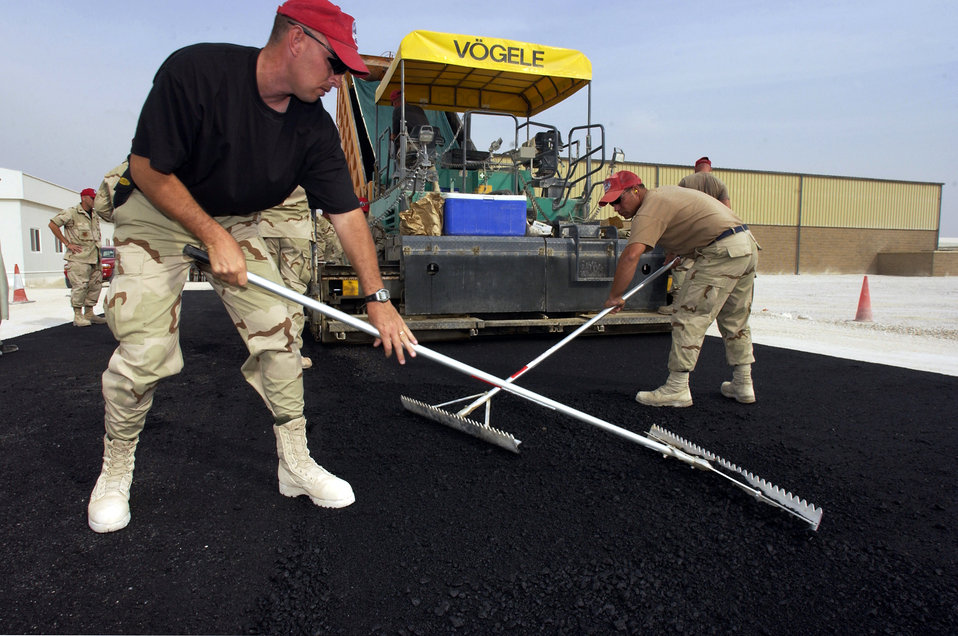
Paving the way

SOUTHWEST ASIA -- Tech. Sgt. Scott Miller (left) and Staff Sgt. Brandon Lancaster evenly distribute asphalt on a new road at a forward-deployed location Nov. 24. Both airmen are assigned to the 1st Expeditionary Red Horse Squadron.